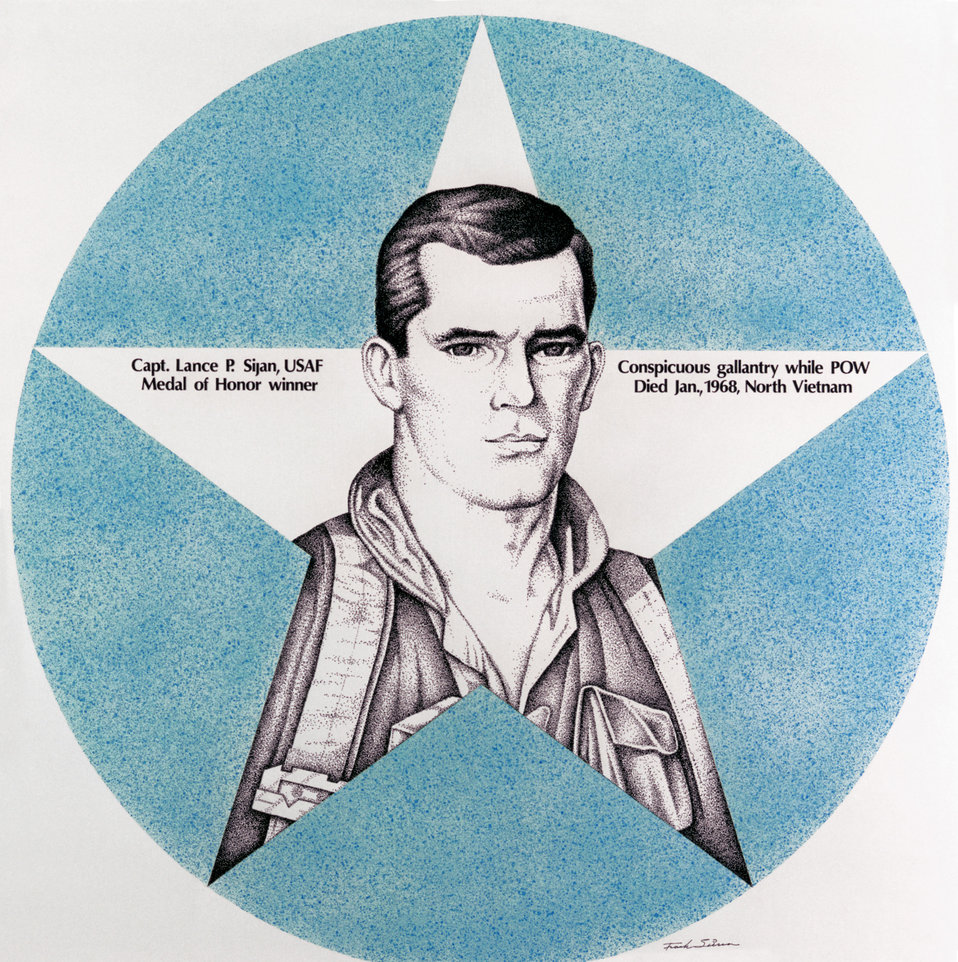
Sijan awards presented at Pentagon

Capt. Lance P. Sijan, Medal of Honor recipient.